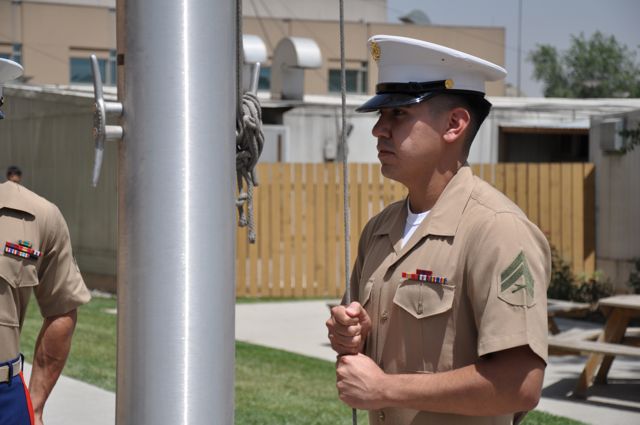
Memorial Day at US Embassy in Kabul